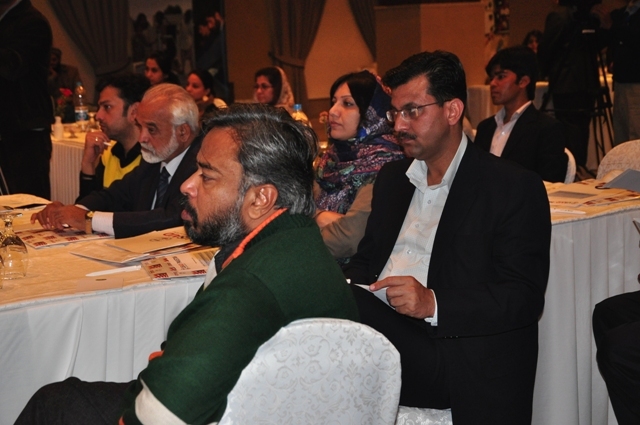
Workshop Participants